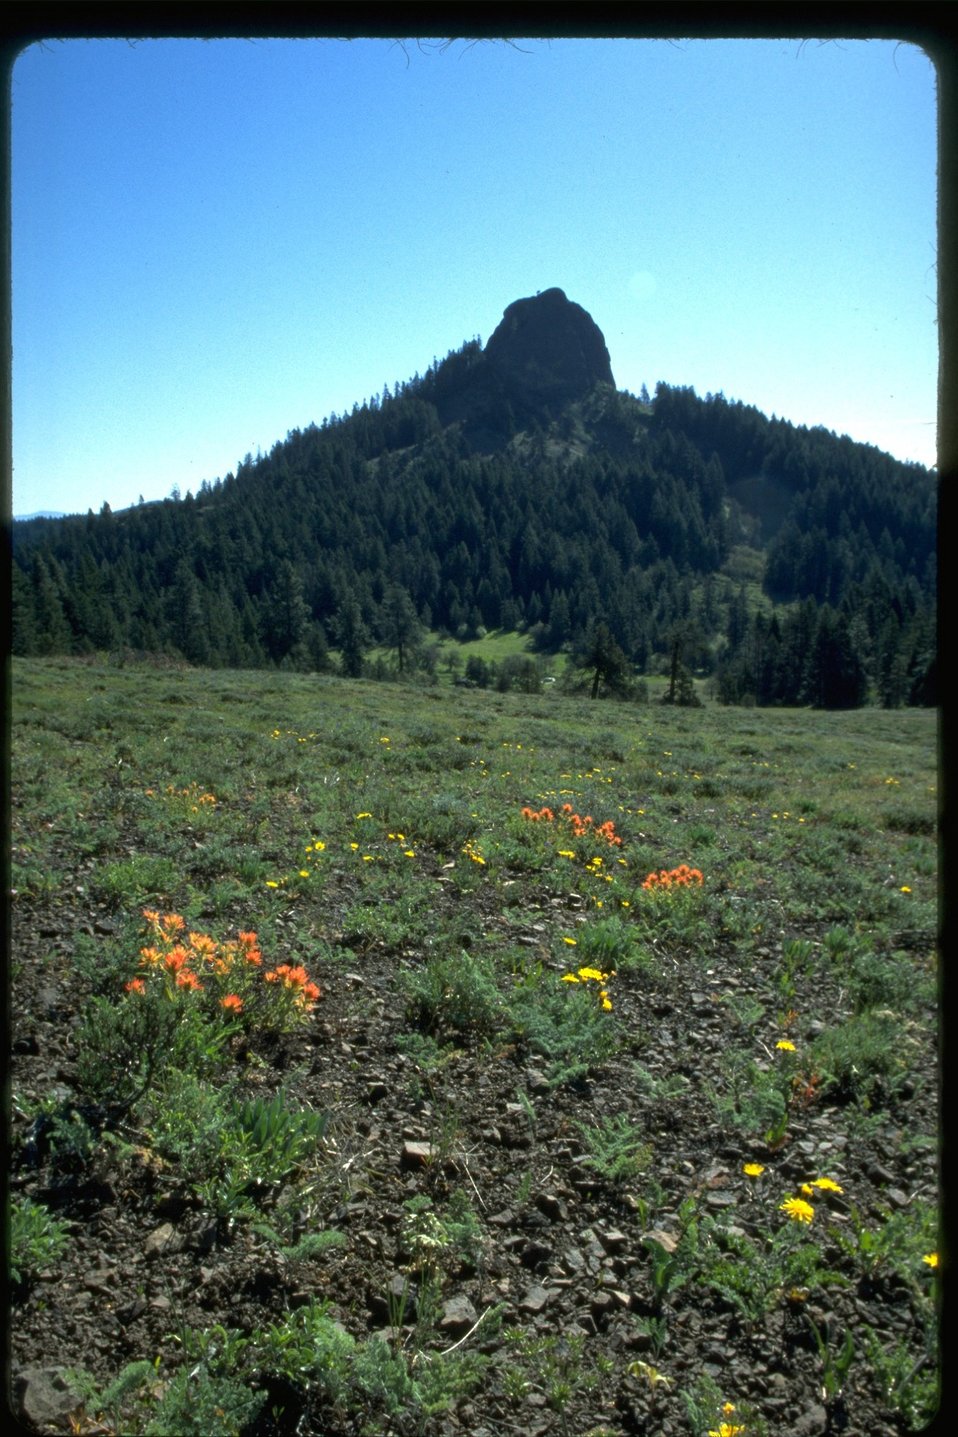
Long shot of Pilot rock with wildflowers in foreground, Cascade-Siskiyou National Monument (CSNM).